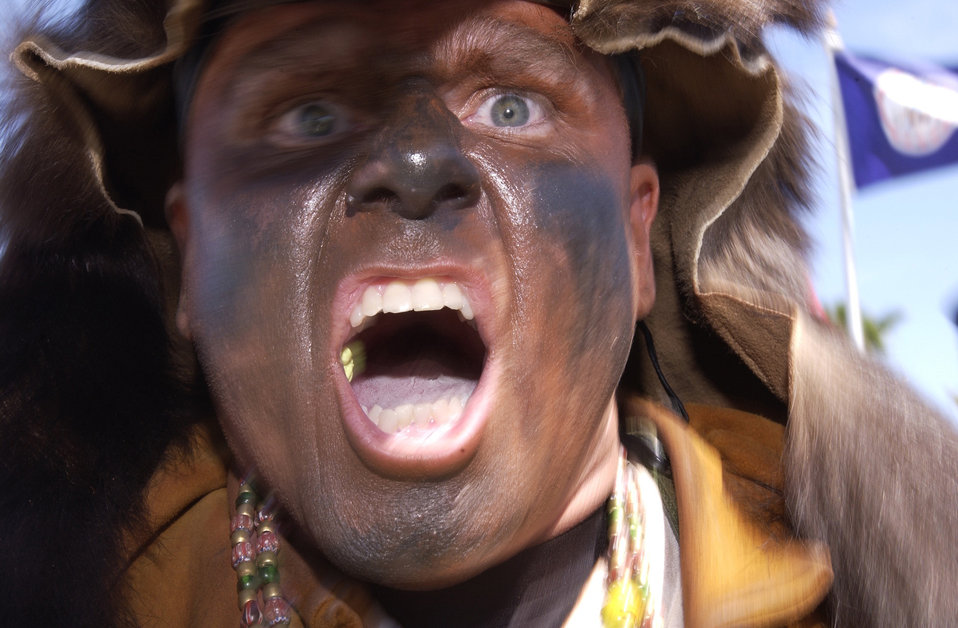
Let's get ready to rumble!!!

VANDENBERG AIR FORCE BASE, Calif. -- Master Sgt. Jeffery Carr, aka